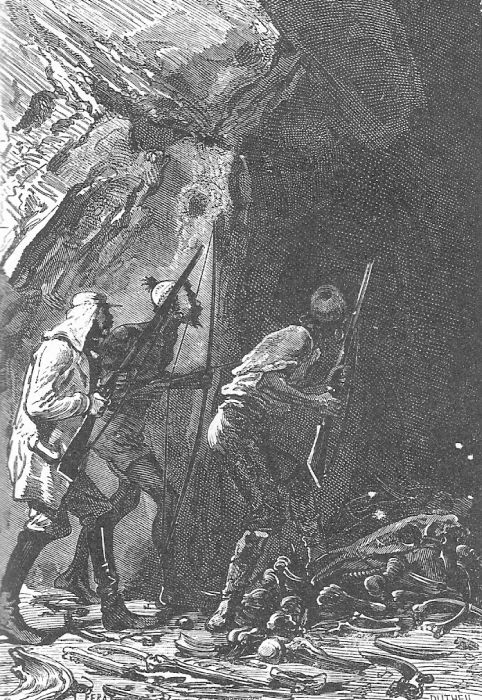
An illustration from Jules Verne's novel 'The Adventures of Three Englishmen and Three Russians in South Africa' (1870) drawn by Jules Férat. Polski: Ilustracja powieści Juliusza Verne'a 'Przygody trzech Rosjan i trzech Anglików w południowej Afryce' (1870) autorstwa Julesa Férata. Français : Jules Verne: 'Aventures de trois russes et de trois anglais dans l’Afrique australe' (1870), dessins par Jules Férat.